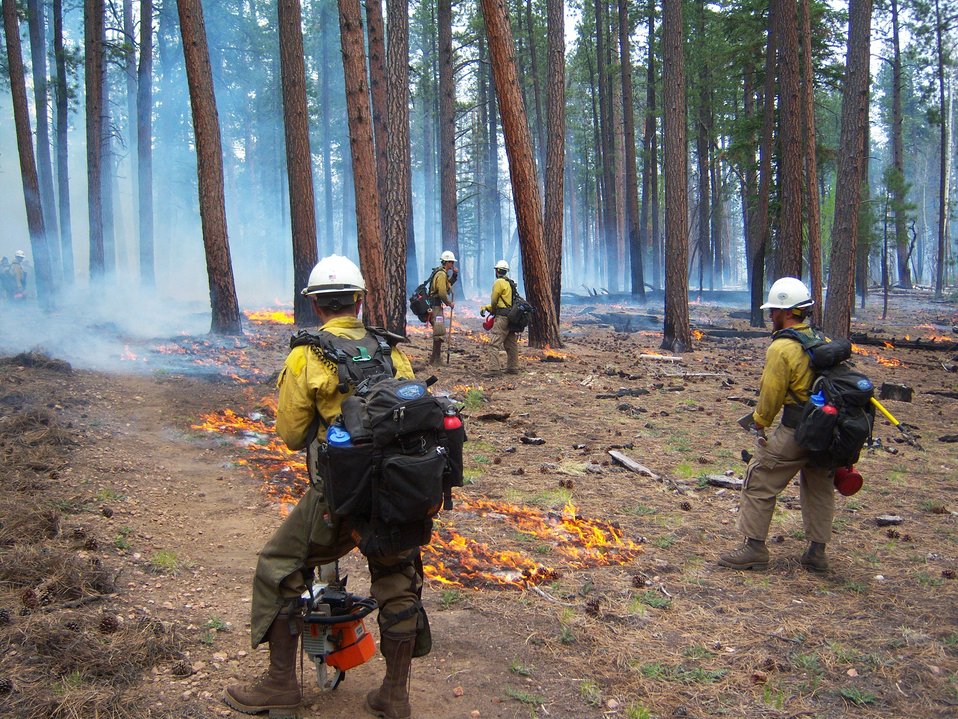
Firefighters burn area out along the handline from the canyon rim on May 29, 2014 to protect the historic Kanabownits Cabin and tie into the W-4 road to confine the fire in that area. The Galahad Fire on the North Rim on the Walla Valley Peninsula in the Grand Canyon National Park in Arizona began on May 23, 2014 from lightening and has consumed 2, 950 acres to date and is 30% contained.